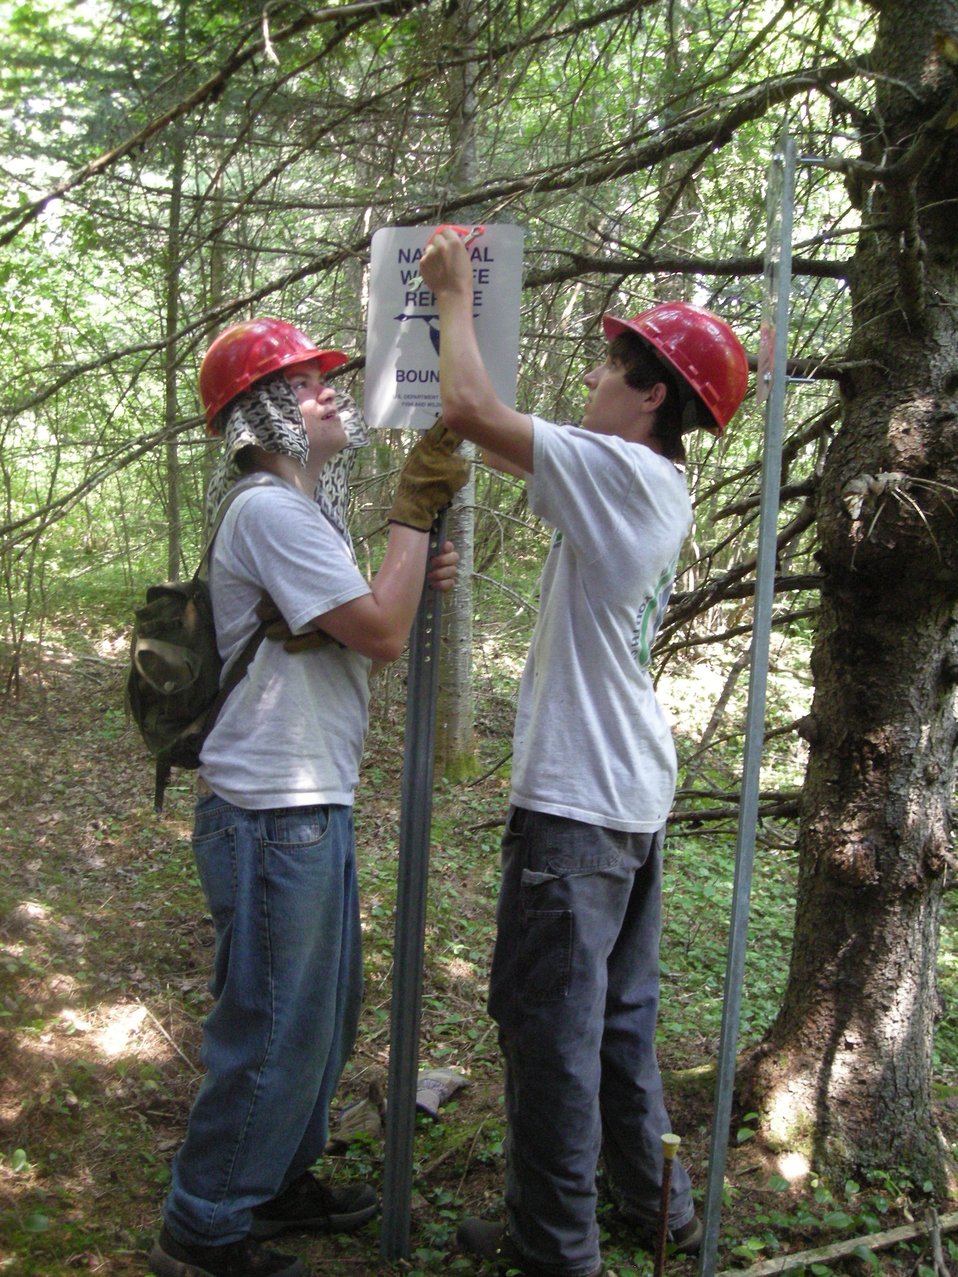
Boundary posting

YCC crew members post refuge boundary signs at the Nulhegan Basin Division of the Silvio O. Conte National Fish and Wildlife Refuge.